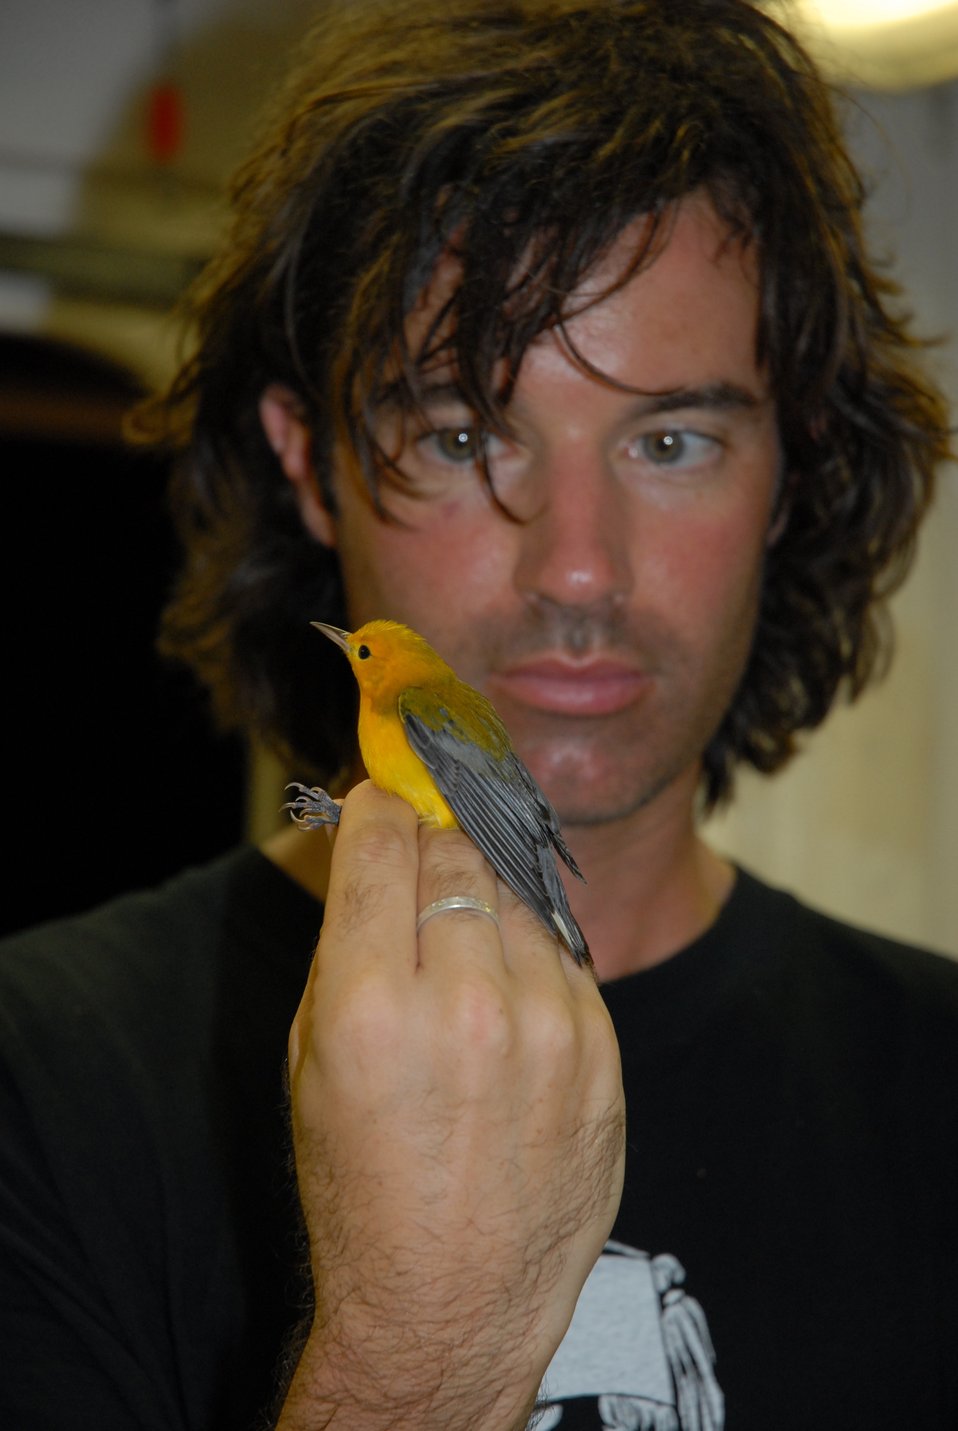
Contemplating the fate of a poor lost land bird - maybe a descendant of a bird studied by Darwin.